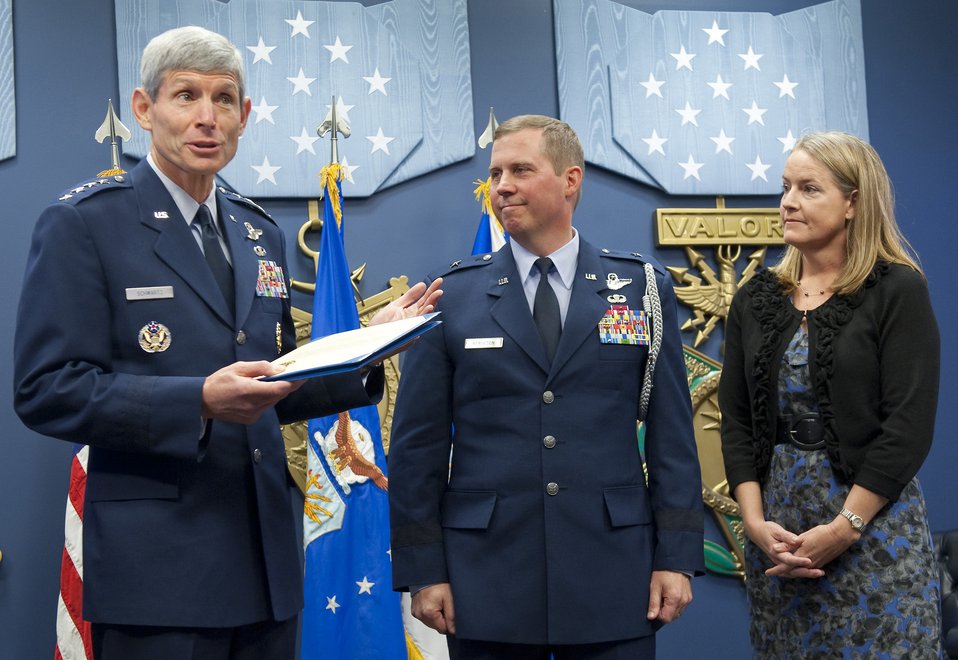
O'Malley Award

Air Force Chief of Staff Gen. Norton Schwartz (left) presents the 2010 General and Mrs. Jerome F. O'Malley award to Brig. Gen. Thomas W. Bergeson and his wife Pamela during a ceremony in the Pentagon Oct. 4, 2010. The award is presented annually to the wing commander and spouse team who have best exhibited their own courage, power, grace and beauty in caring for Air Force families. The award was established after the O'Malleys, who were known for their leadership and contributions to Air Force families and communities, were tragically killed in a plane crash in 1985.